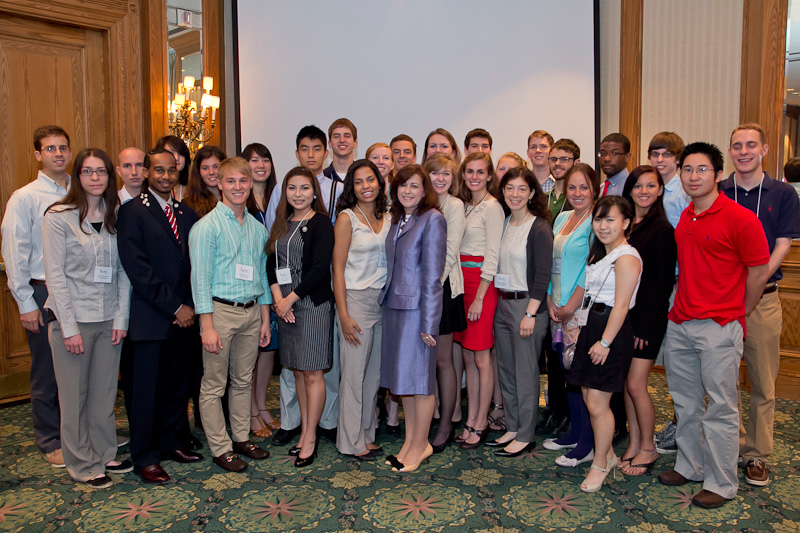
Under Secretary Sonenshine With Critical Language Scholarship Students (Chinese)

Under Secretary of State for Public Diplomacy and Public Affairs Tara Sonenshine speaks with Critical Language Scholarship (CLS) students studying Chinese at a conference in Washington, D.C., June 20, 2012.